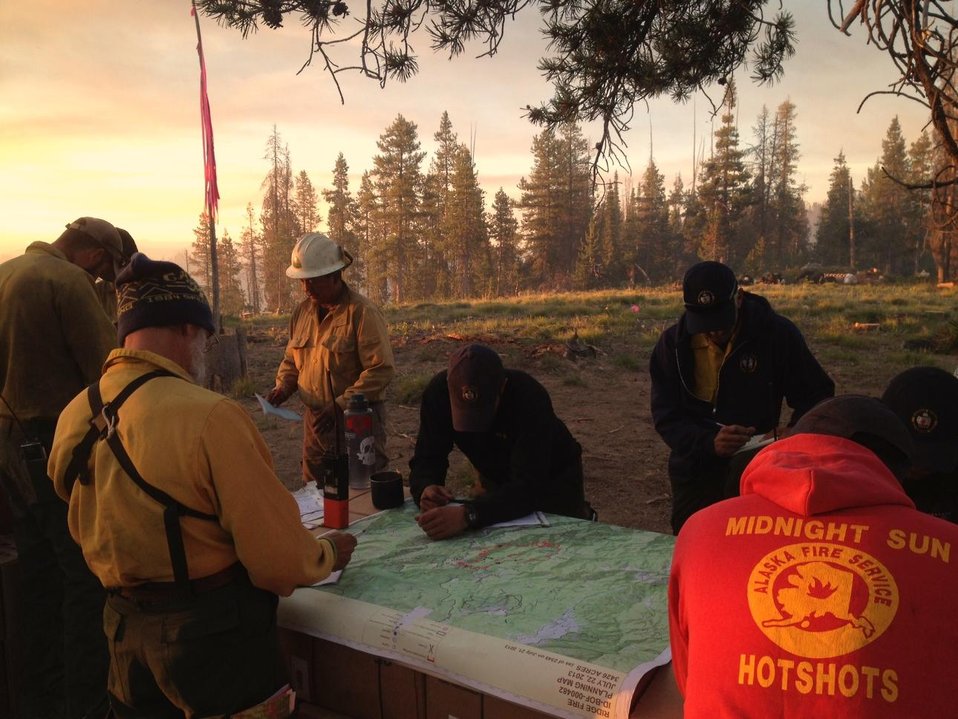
Firefighters plan strategy to fight the Ridge Fire. The Ridge Fire in the Boise National Forest, ID near Lowman, ID began on Jul. 16, 2013 by lightning and has consumed approximately 5, 263 acres. The Ridge Fire is approximately 38% contained.